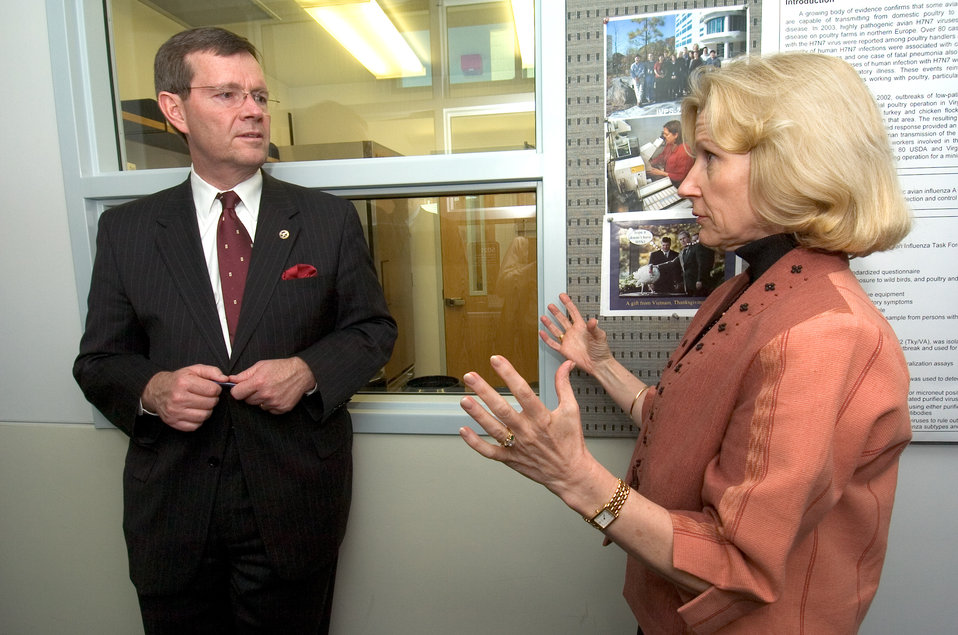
This 2005 photograph was taken during Michael O. Leavitt's first trip to the CDC while in his newly appointed role as Secretary of Health and Human Services. Here Mr. Leavitt was being briefed by CDC's Dr. Nancy Cox.